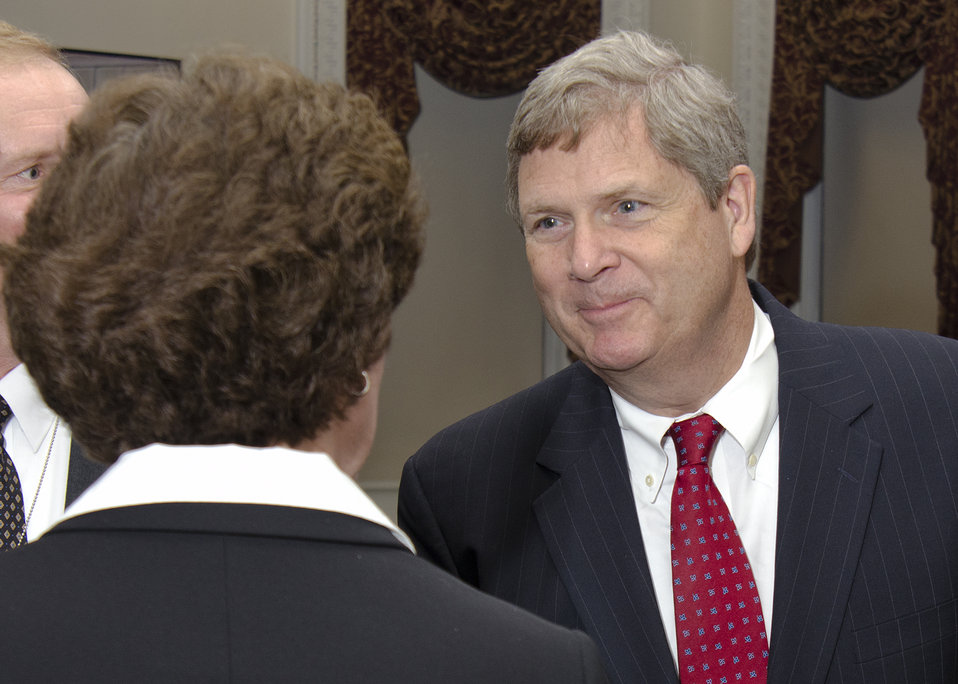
On Wednesday, Jul. 6, 2011, Agriculture Secretary Tom Vilsack attended a meeting at the White House in Washington, DC, with President Barack Obama, the President's Domestic Policy Adviser Melody Barnes and rural communities leaders from across the country for the White House Rural Champions of Change event. The purpose of this meeting is to strengthen rural communities and promote economic growth. Prior to coming here, they were posed with a question about, what should/should not the government be doing to strengthen rural communities and promote economic growth.